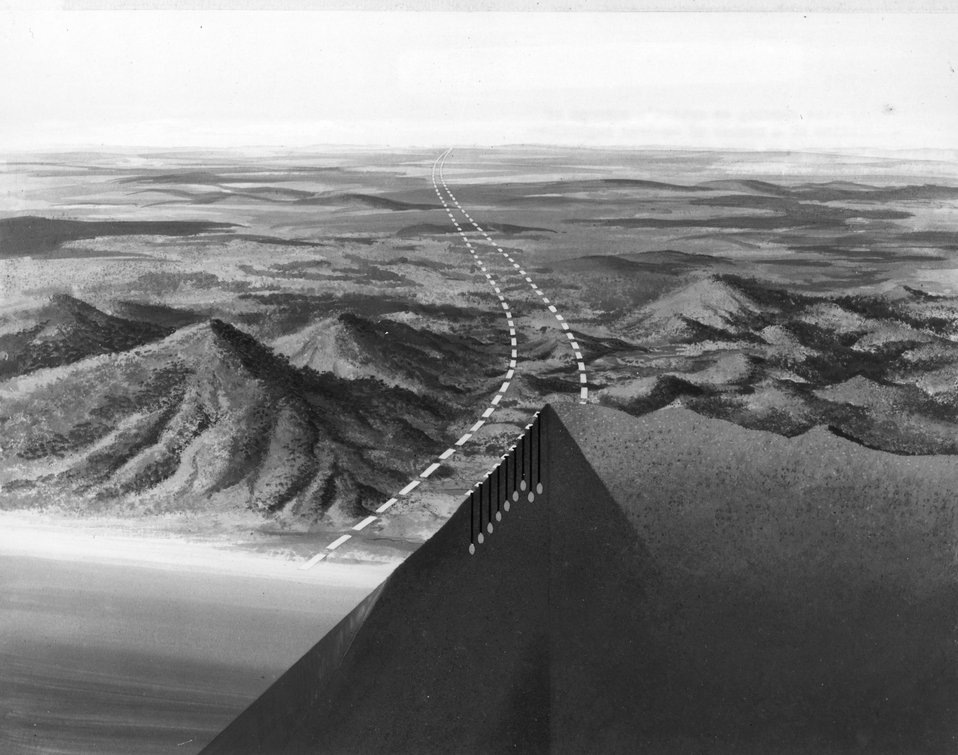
Cut-away view showing an artist's concept of the location of a number of nuclear explosives properly buried so that simultaneous detonation will excavate a ditch-like crater. c. 1966